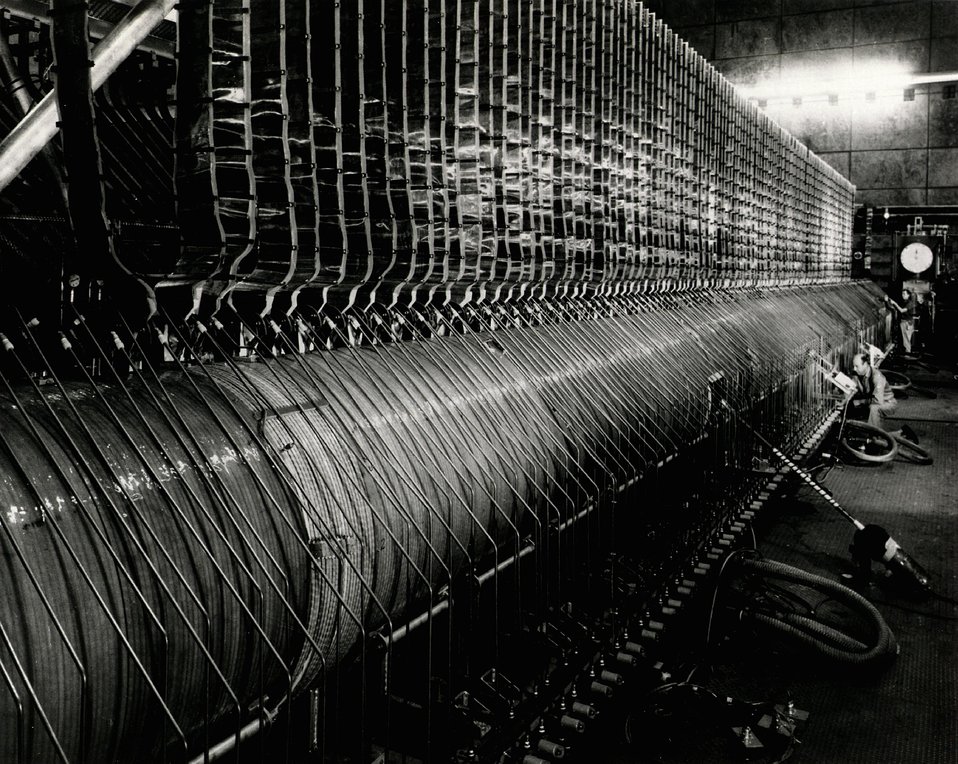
Photo shows a side view of the Astron device. A single-layer solenoid, 92 feet long, is built around an aluminum vacuum vessel. Circa 1966.